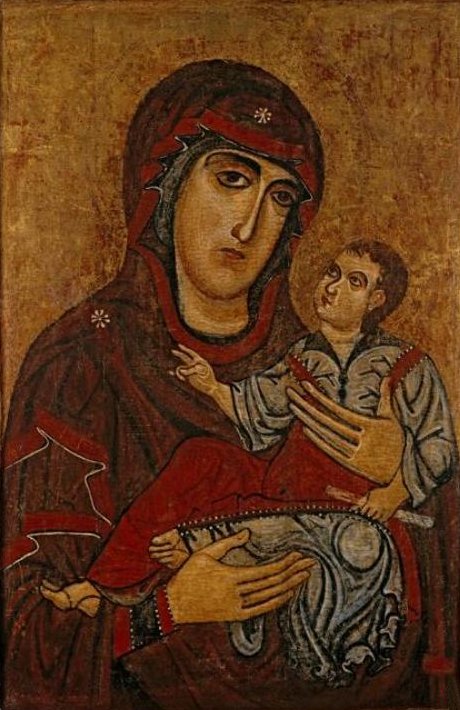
'Madonna and Child', tempera and gold on wood panel by a master of the School of Lucca, ca. 1200, El Paso Museum of Art